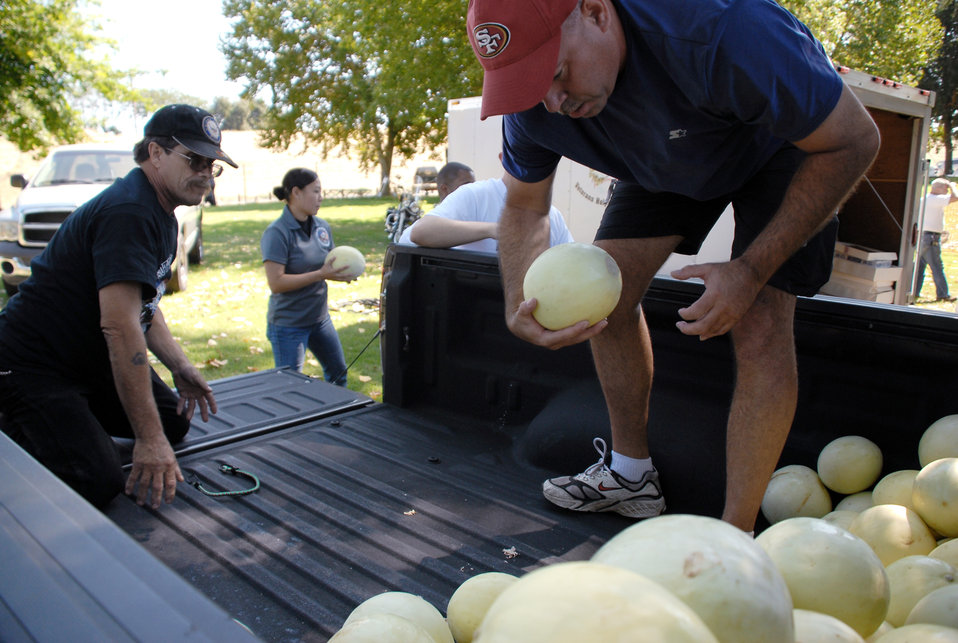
Airmen, community help vets

Master Sgt. Steve Gage helps unload melons Aug. 20 at the Yuba-Sutter Veterans Stand Down at the River Bottoms Park in Marysville, Calif. Dozens of volunteers from Beale Air Force Base, Calif., were on hand to set up, prepare and serve food throughout the three-day event. Sergeant Gage is assigned to the 9th Maintenance Operations Squadron.